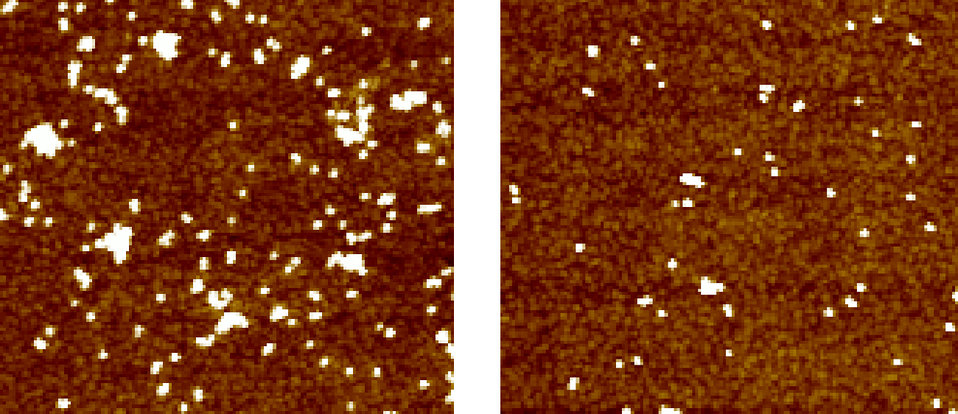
Nanoparticles

After gold nanoparticles are trapped on the brown collection surface (left), the NIST team can apply a mild electric field and release most of them (right). The ability to trap and release particles in this fashion could aid in studying their properties, particularly with respect to their effects on human health.